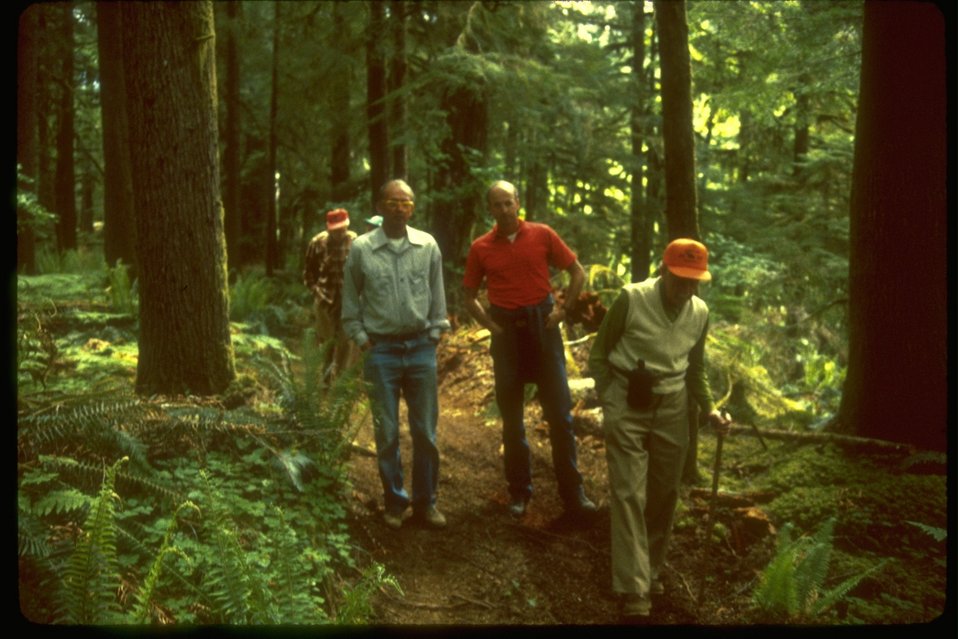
The original volunteers on the North Umpqua Trail.